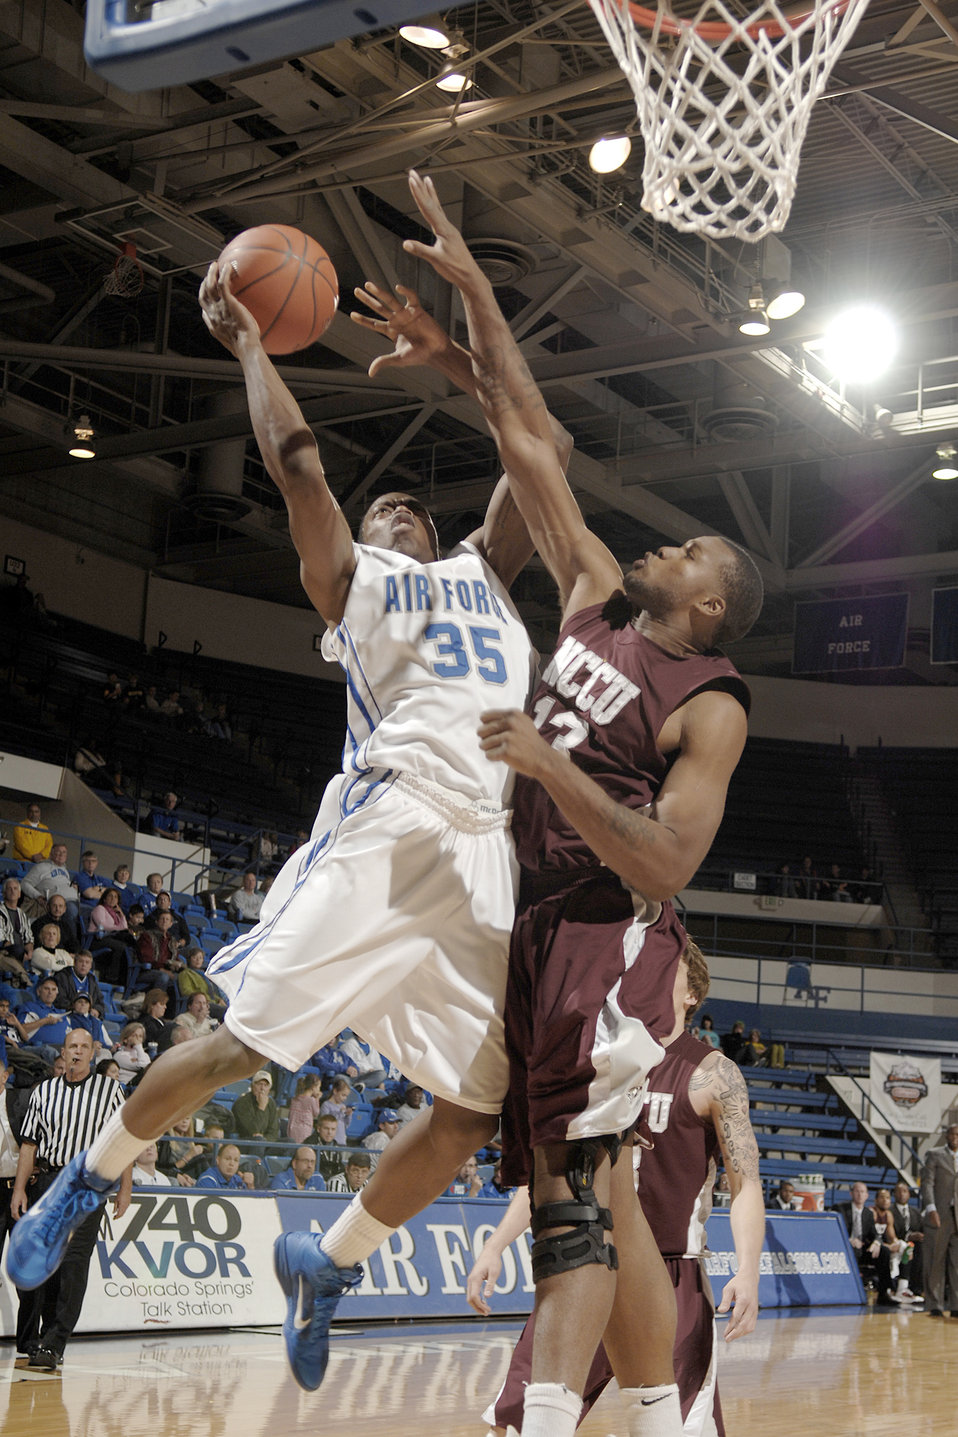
Falcons defeat the Eagles

Air Force Academy senior Evan Washington drives for two as the Falcons defeat North Carolina Central 73-56, Dec 11, 2010, at Clune Arena in Colorado Springs, Colo. Washington had 15 points and 8 rebounds as the Falcons won their fourth straight home game.